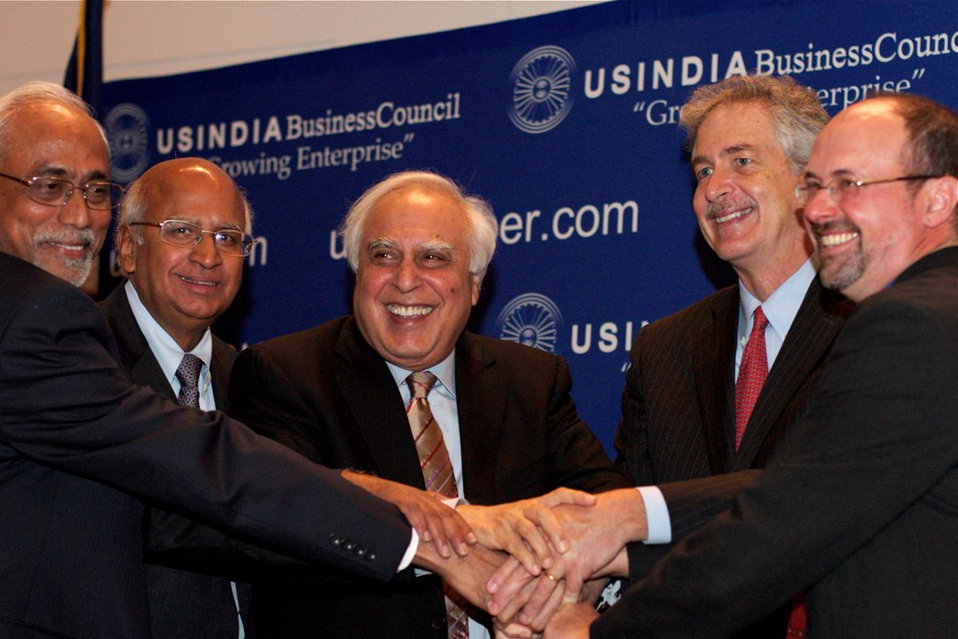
Deputy Secretary Burns Participates in the U.S.-India Higher Education Summit

Deputy Secretary of State William Burns, second from left, participates in the U.S.-India Higher Education Summit at Georgetown University in Washington, D.C., on October 13, 2011.